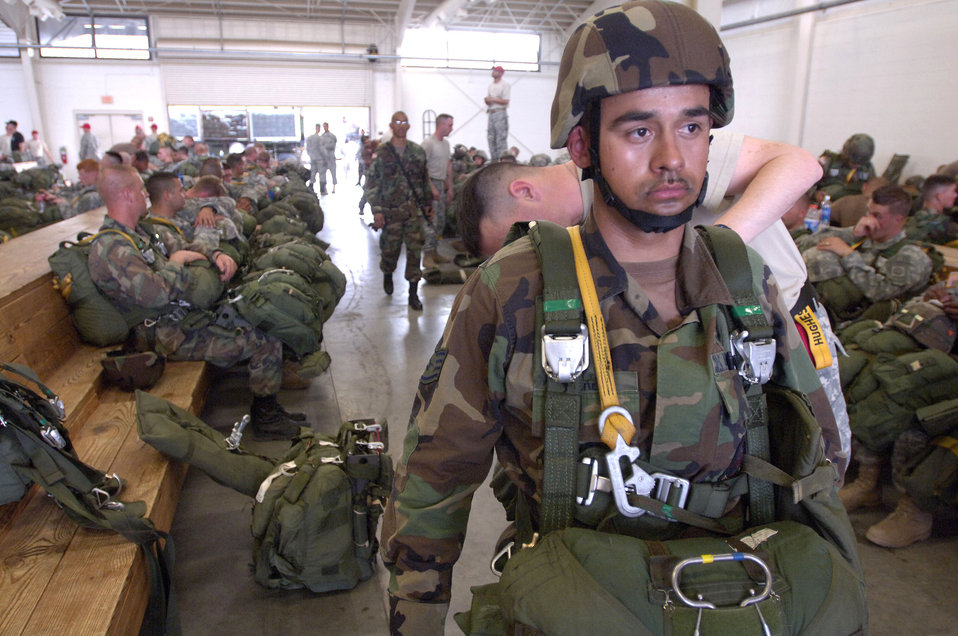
Chute inspection

Staff Sgt. Flavio Perez has his chute rigging inspected by the jumpmaster, Army Lt. Col. William Hughes, at Pope Air Force Base, N.C., on Wednesday, April 25, 2006. Sergeant Perez was jumping with more than 2,000 Soldiers from the Army's 82d Airborne Division at a Joint Forcible Entry Exercise at Fort Bragg, N.C.